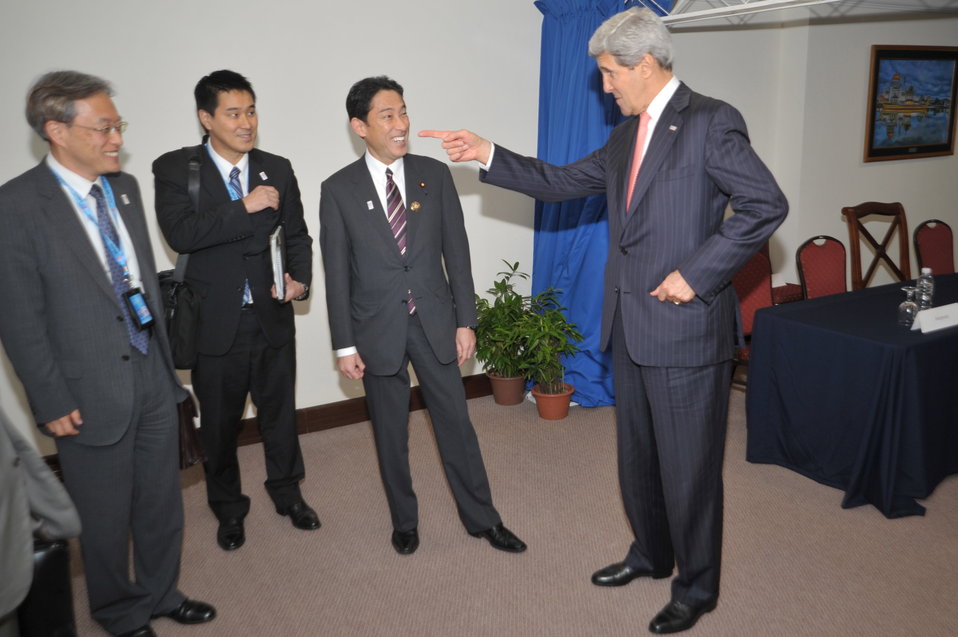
Secretary Kerry Jokes With Japanese Foreign Minister Kishida

U.S. Secretary of State John Kerry laughs with Japanese Foreign Minister Fumio Kishida and Republic of Korea Foreign Minister Yun Byung-se and his advisors before a trilateral meeting at the ASEAN ministeral meeting in Bandar Seri Begawan, Brunei, on July 1, 2013.